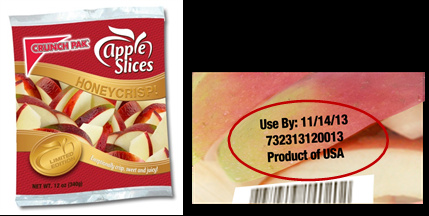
RECALLED – Apple slices

November 14, 2013 – Product Recall – Crunch Pak Issues Voluntary Recall of Limited Quantities of Crunch Pak Brand Apple Slices Because of Possible Health Risk.